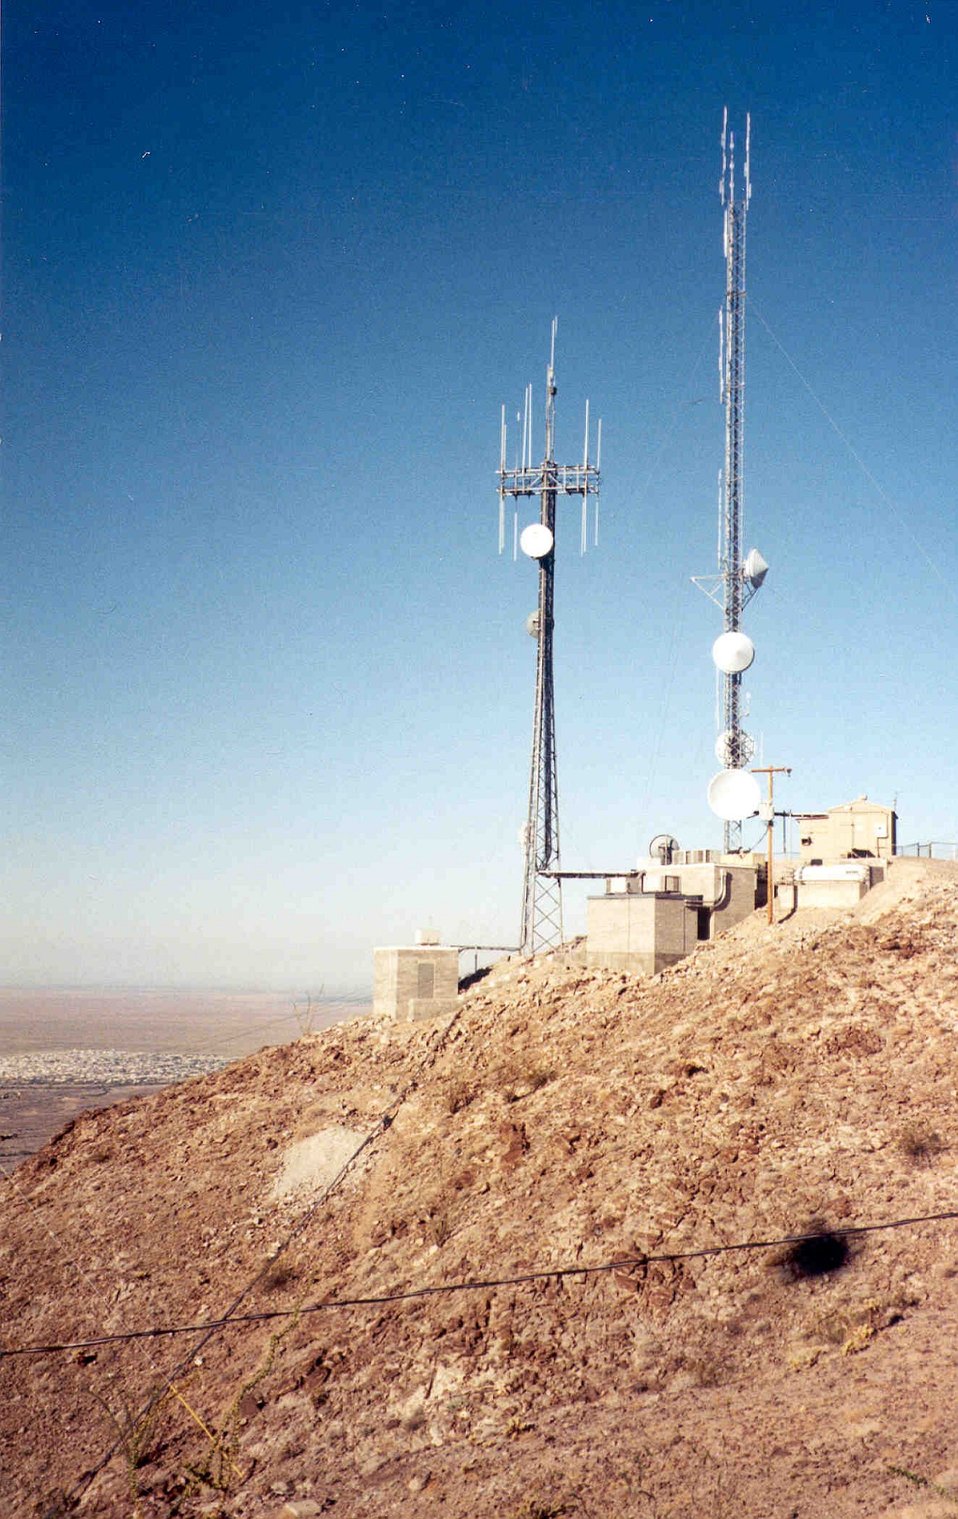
Telegraph Pass Communication Facility